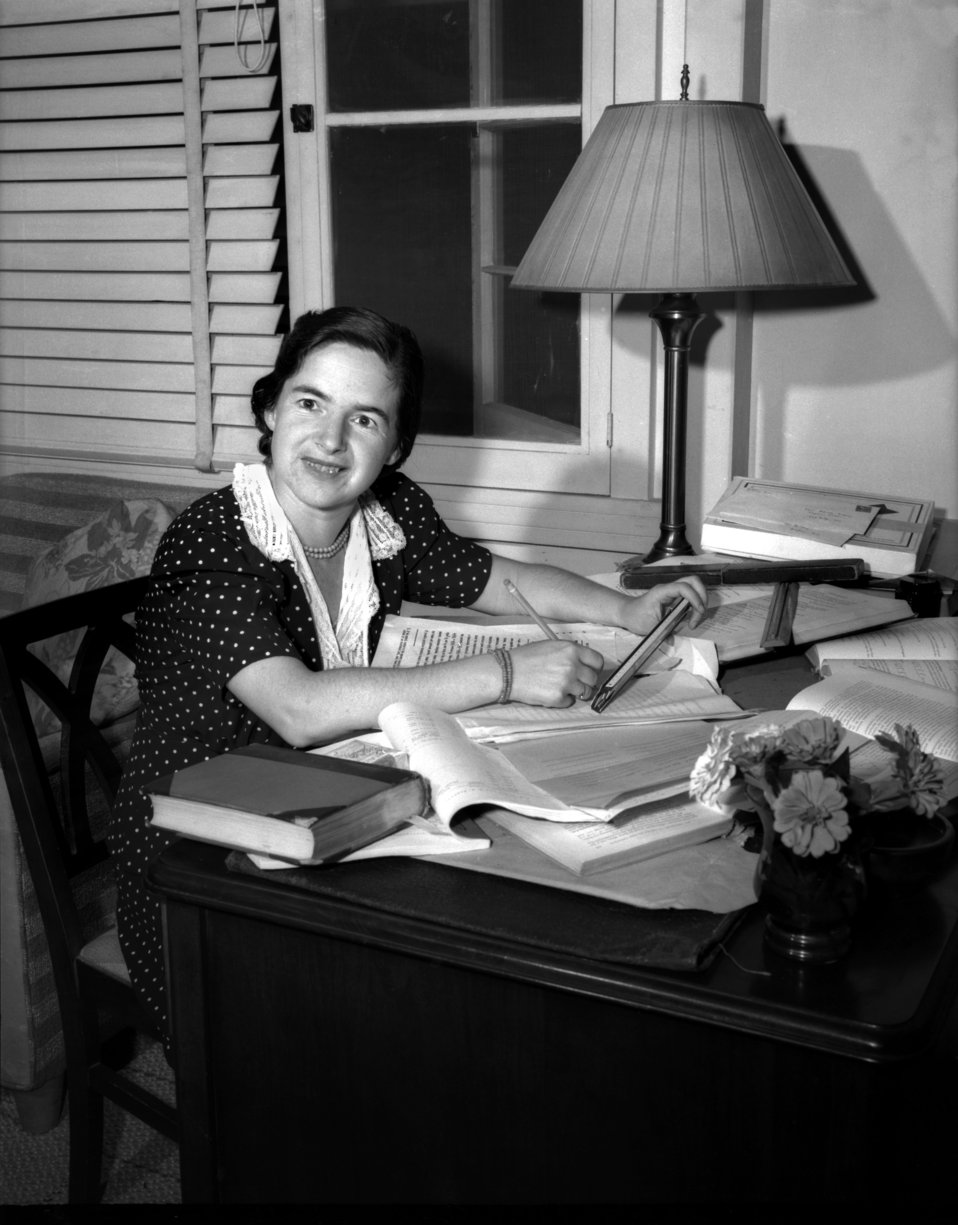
Theoretical Physicist Dr. Gertrude Nordheim Oak Ridge

3247-1 DOE photo Ed Westcott 10-1945 Oak Ridge Tennessee